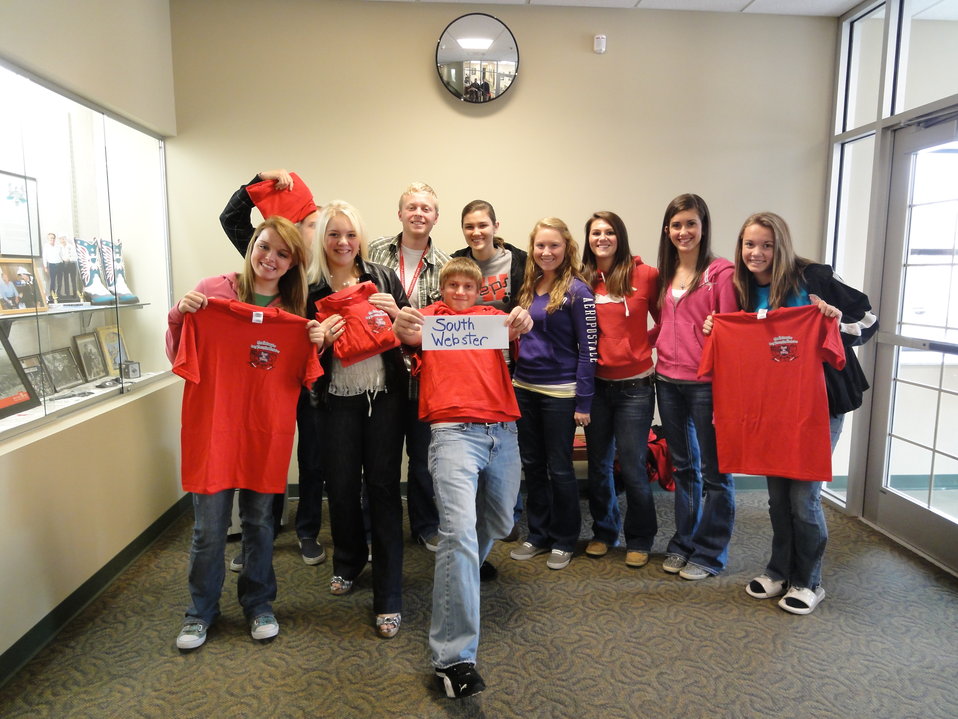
Drug Facts Week Event held in Portsmouth, Ohio

Scioto county participants learned the facts about drugs and alcohol abuse, and became Teen Ambassadors to their schools and peer groups. Teen Ambassadors will become peer influencers among their friends and peer groups, and agents of positive resistance to drugs and alcohol.